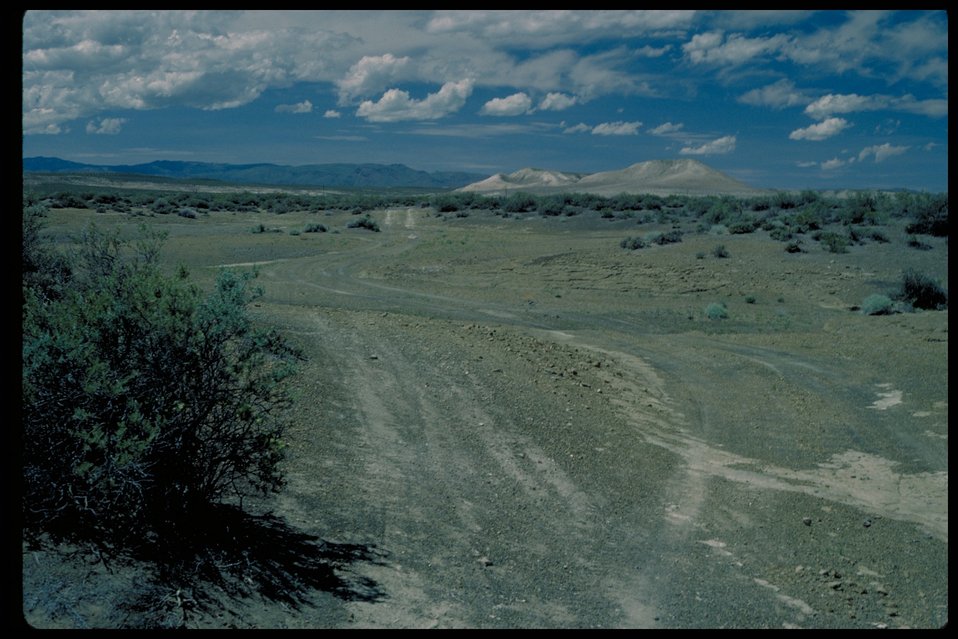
Oregon Trail west of Wild Horse Butte Lower Snake River District